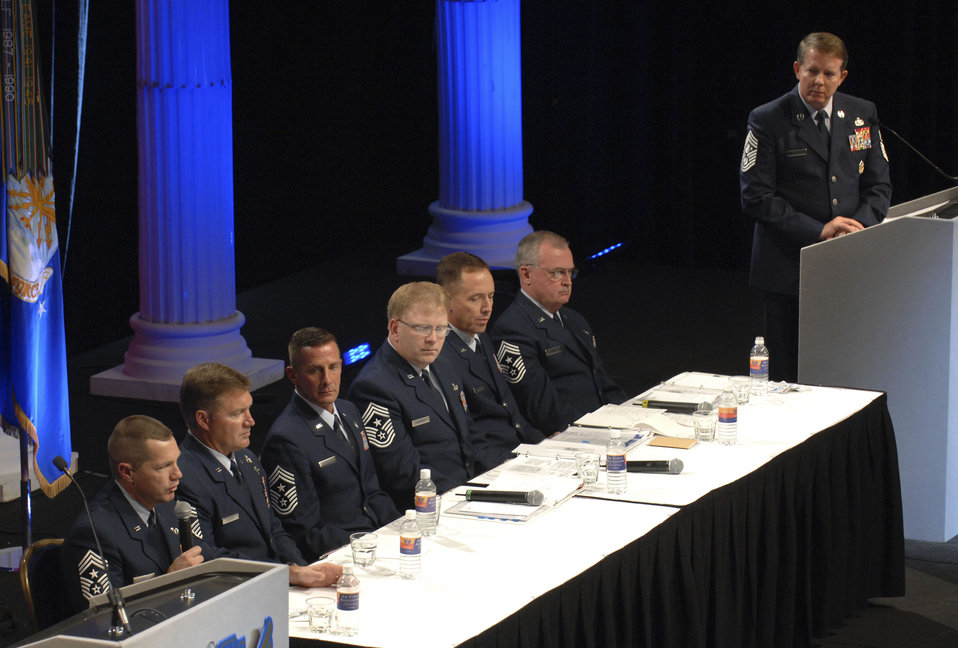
Air Force Association conference under way

Chief Master Sergeant Dave Popp, Air Combat Command's command chief, answers a question during the Command Chief's Forum chaired by Chief Master Sergeant of the Air Force Rodney J. McKinley during the Air Force Association's Air & Space Conference and Technology Exposition on Sept 24 in Washington D.C. The conference will last for three days and will cover the newest technology and also have career enhancement seminars. The Air Force Association also will honor the 12 Outstanding Airmen of the United States Air Force.